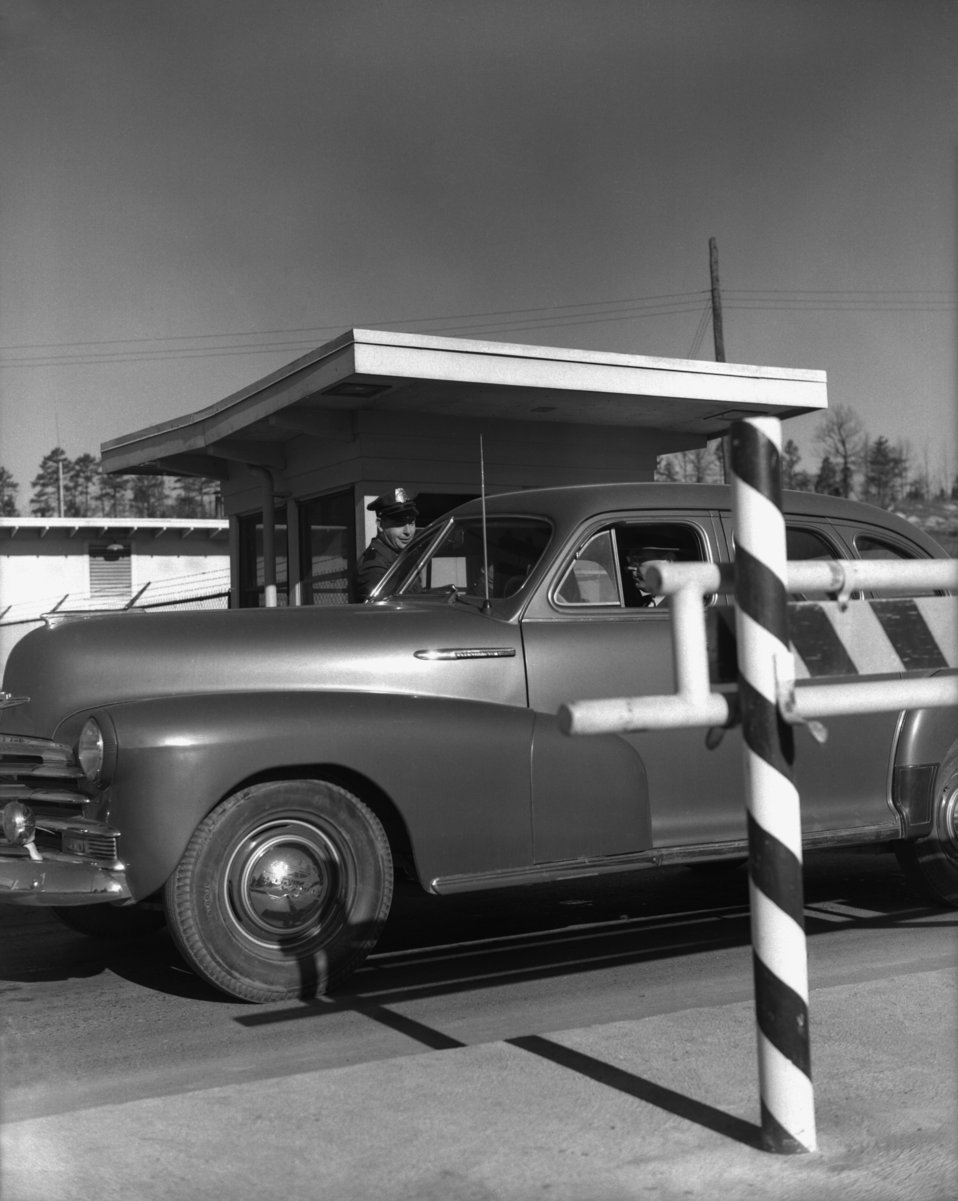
Elza Gate Security Patrole Oak Ridge

005409-7b DOE photo by Ed Westcott

Elza Gate Oak Ridge Tennessee 2/25/1949